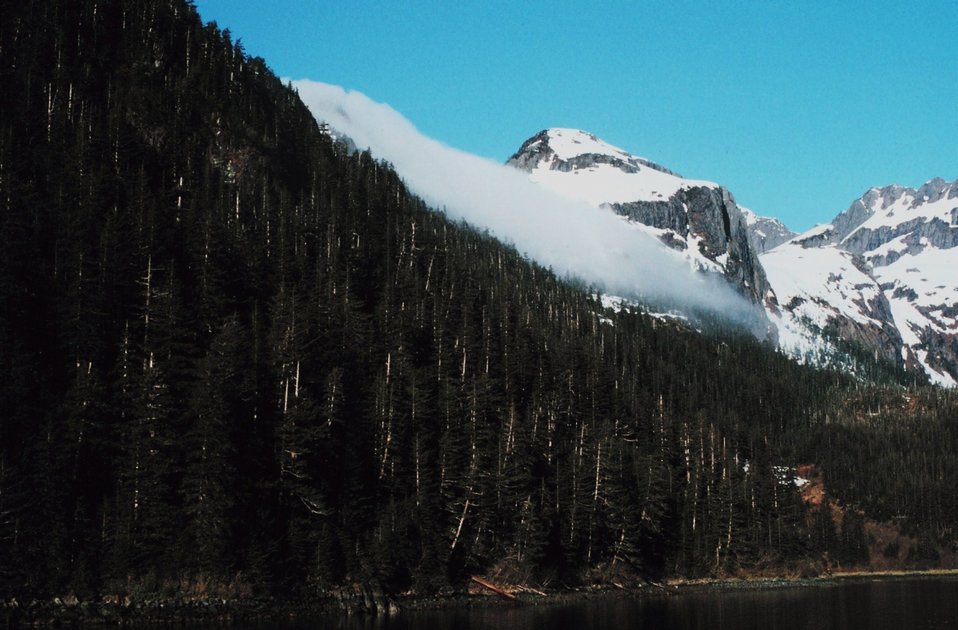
Fog tumbling through a break in the mountains at Prince William Sound